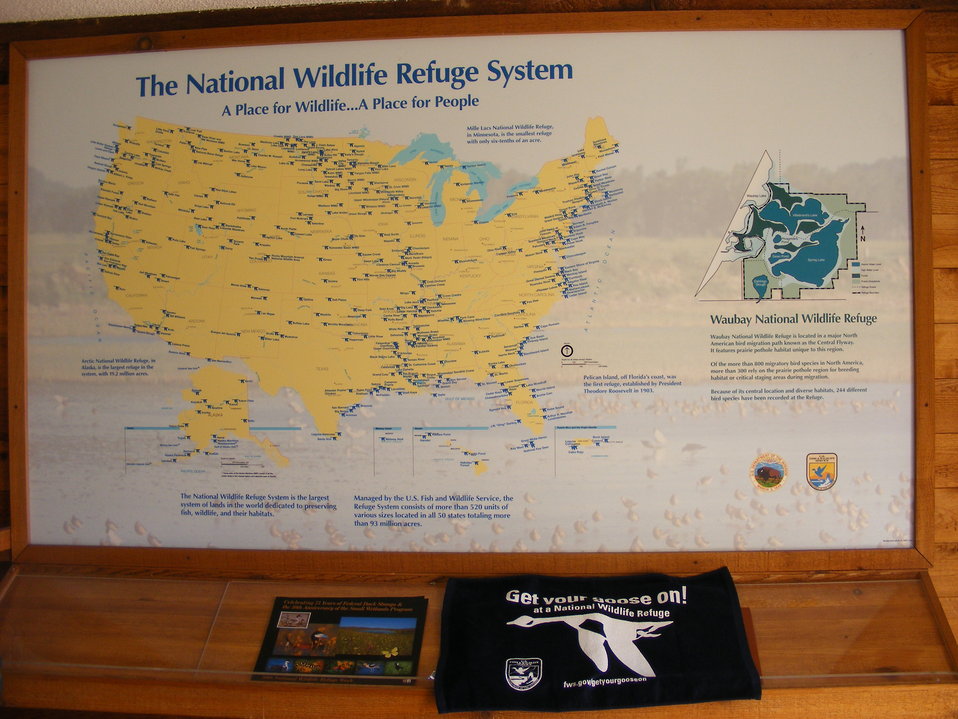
Get Your Goose On!